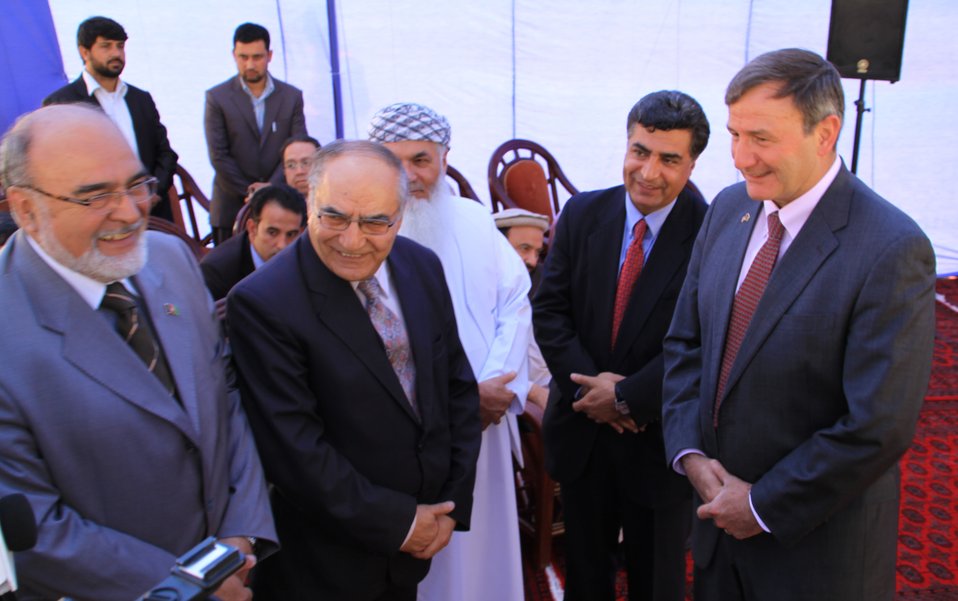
105 MW Tarakhil Power Plant Handover